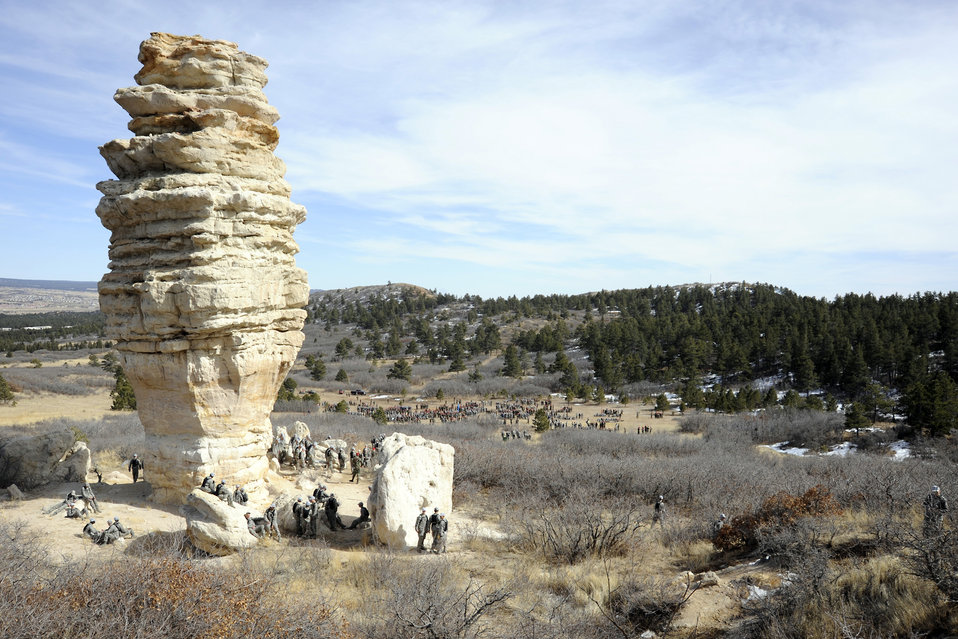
Academy freshmen attain status

The Class of 2013 search for their squadron charges during the final stages of